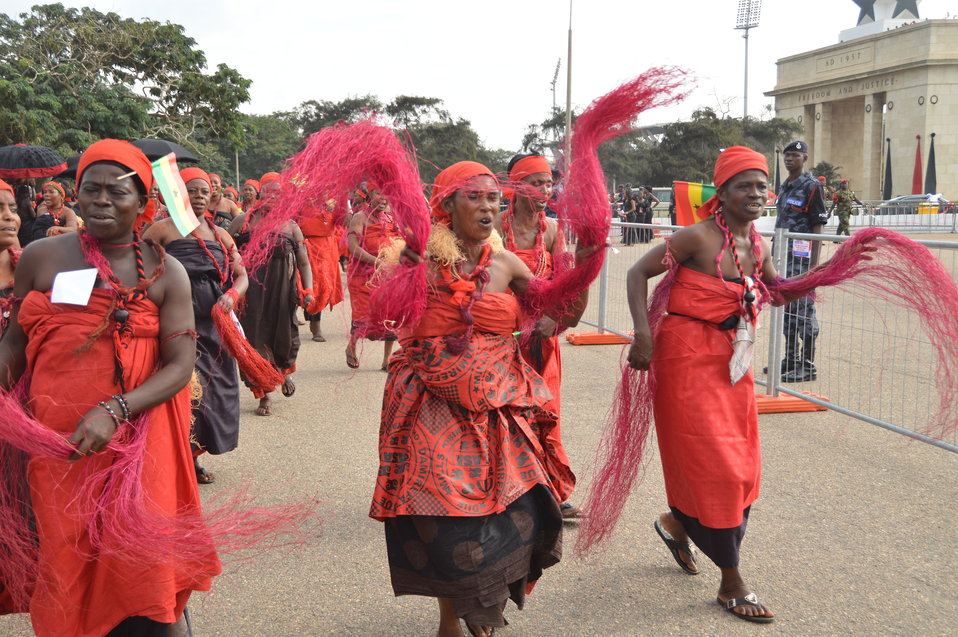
Ghanaian women mourn the loss of President John Atta Mills in Accra, Ghana, on August 10, 2012.